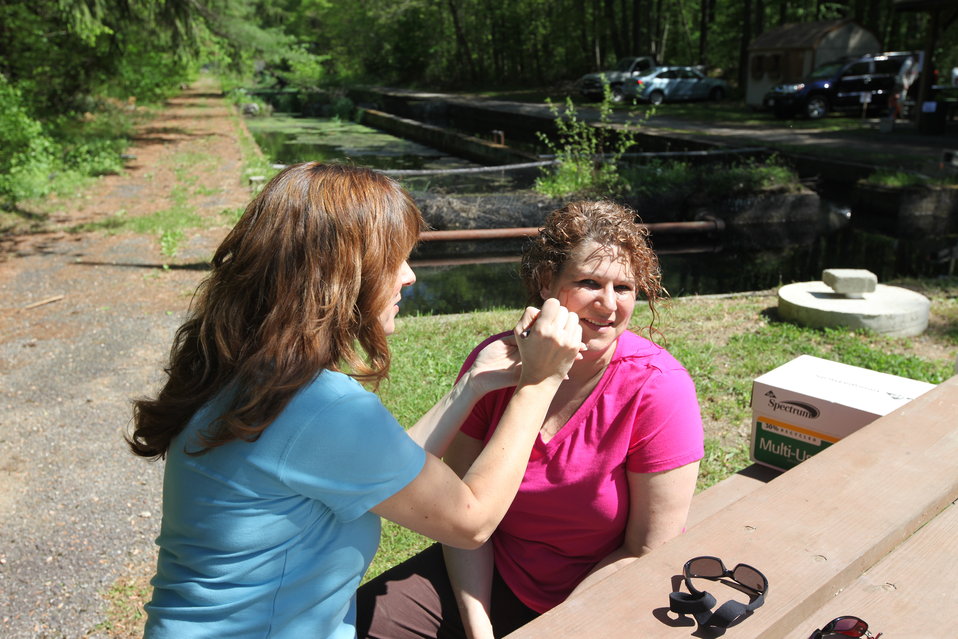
Youth Fishing Derby 2012

Megan Nagel/USFWS